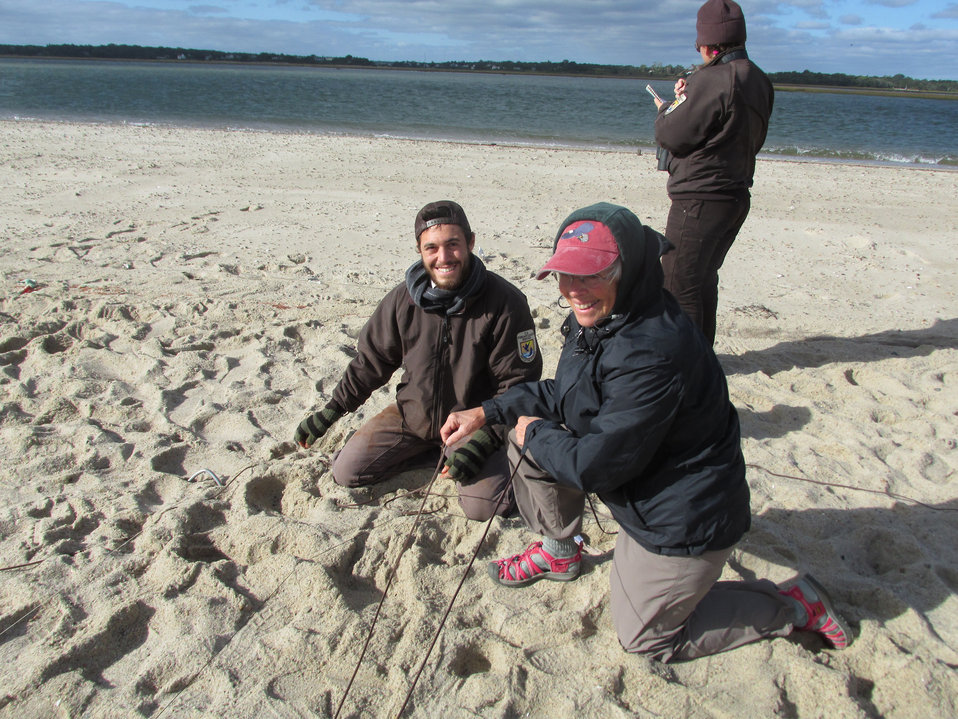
Red knot cannon netting in Cape Cod

Yianni Laskaris with Monomoy National Wildlife Refuge and volunteer Molly Cornell set up the lines that lead back to the hiding area.